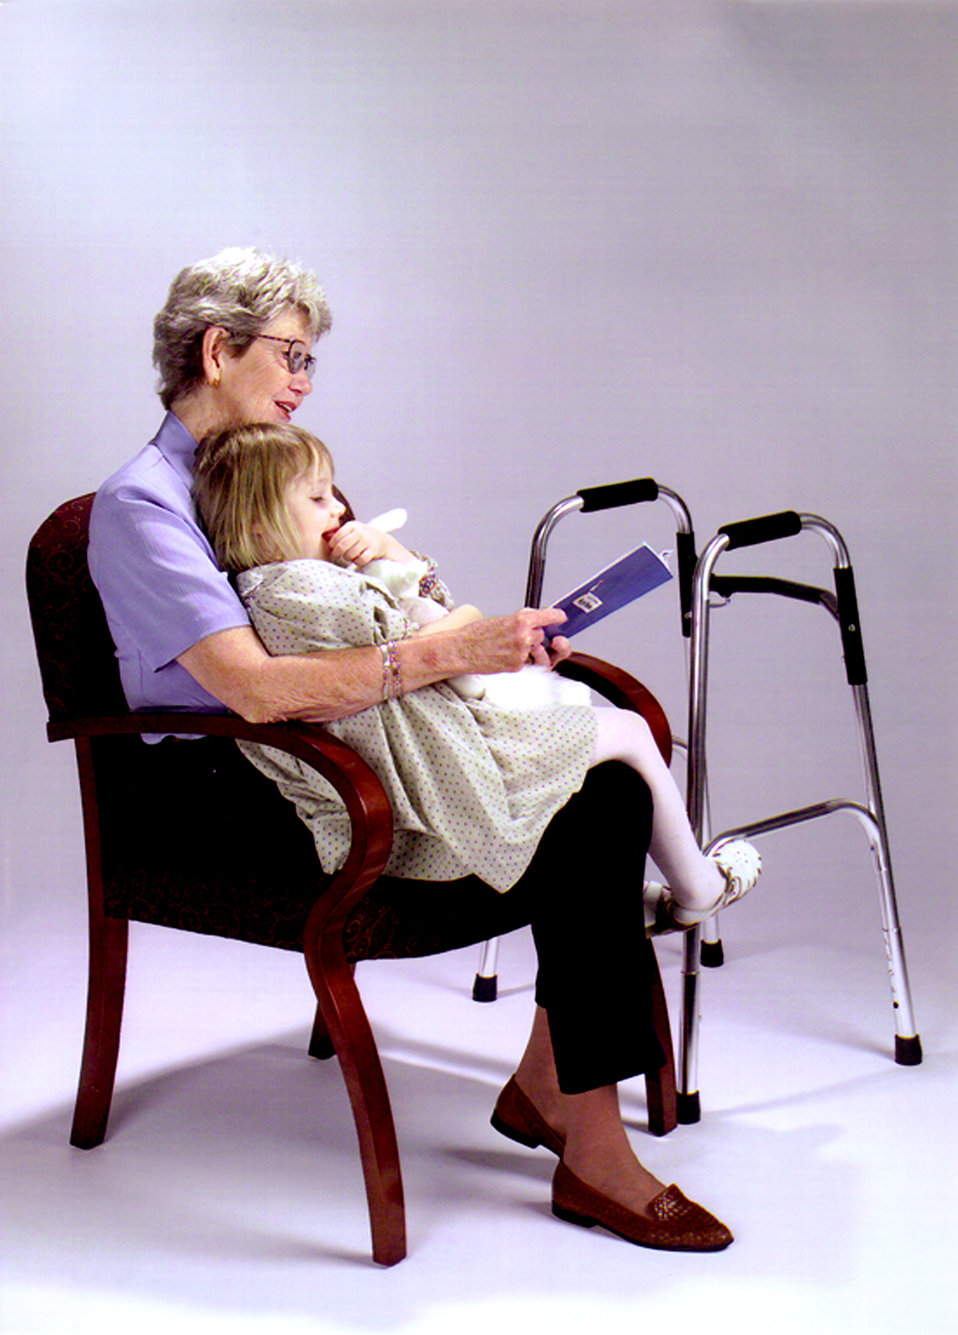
This is one of a series of ten images, (PHIL# 9144 - 9153), depicting one of LifeSpan� Furnishing's line of chairs, designed to make sitting down and rising safer and easier, and sitting more comfortable and supportive. An elderly woman was seated in this chair with a young girl on her lap to whom she was reading from a brochure. The woman's walker is in the background. These chairs combined aesthetics and function, and were more comfortable for most people, benefiting those who would care for others, by reducing physical exertion and stress needed when assisting others. The user could take advantage of the extended arms for stability when lowering or rising from a seated position. Close attention was paid to many small details including the non-skid rubber feet, and the elimination of pinch points and sharp edges. The LifeSpan� seating product line included four different designs, all based on an extended arm and leg concept that provided users with better leverage and support.